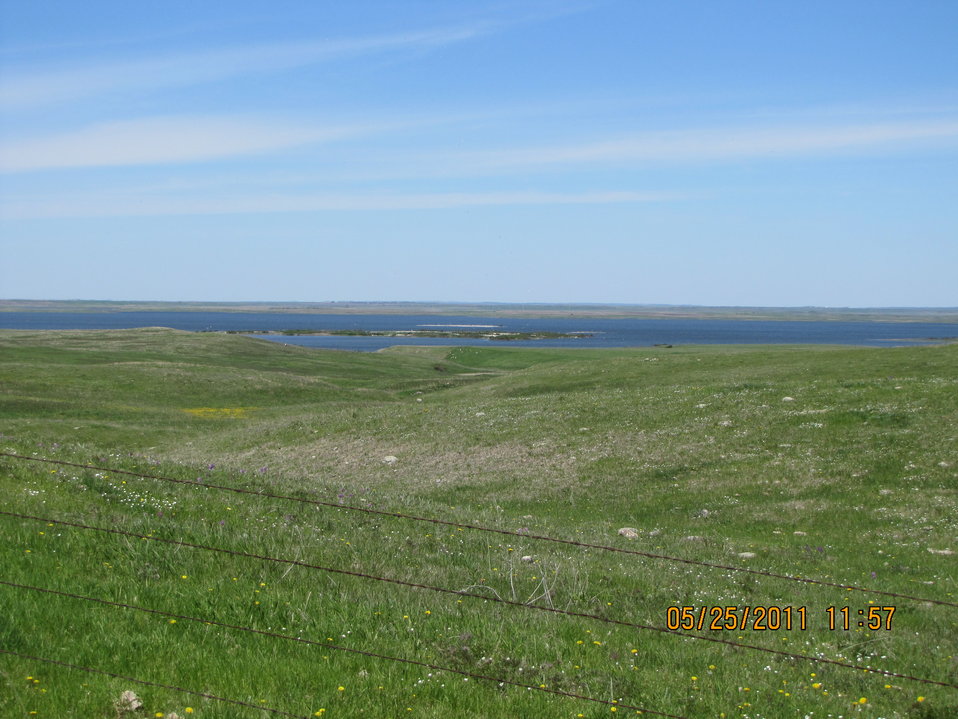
Nesting island in Chase Lake NWR

Two of the three nesting islands found in Chase Lake National Wildlife Refuge (NWR). View from the southeast. The north island contains mostly California and Ring-Billed Gulls.